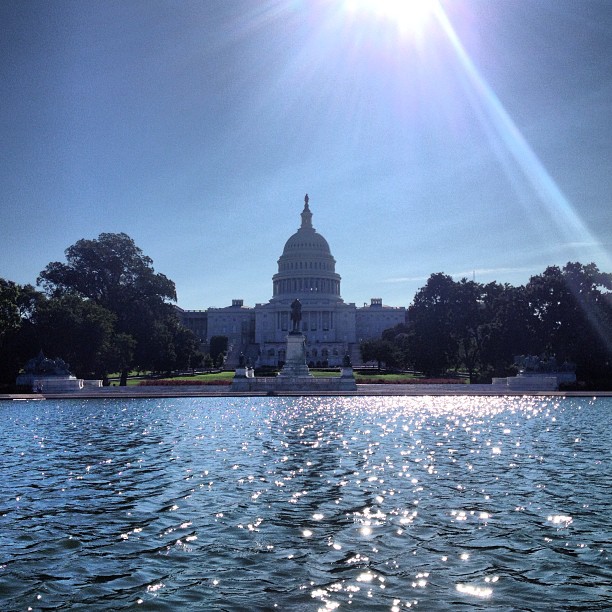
Capitol Reflecting Pool